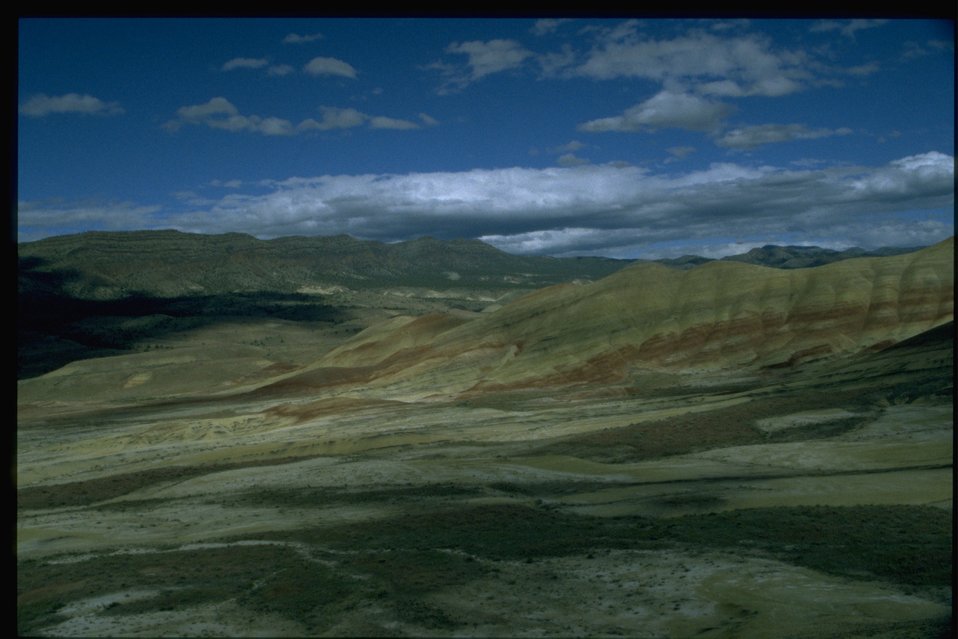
Painted Hills National Monument (Mitchell, Oregon).